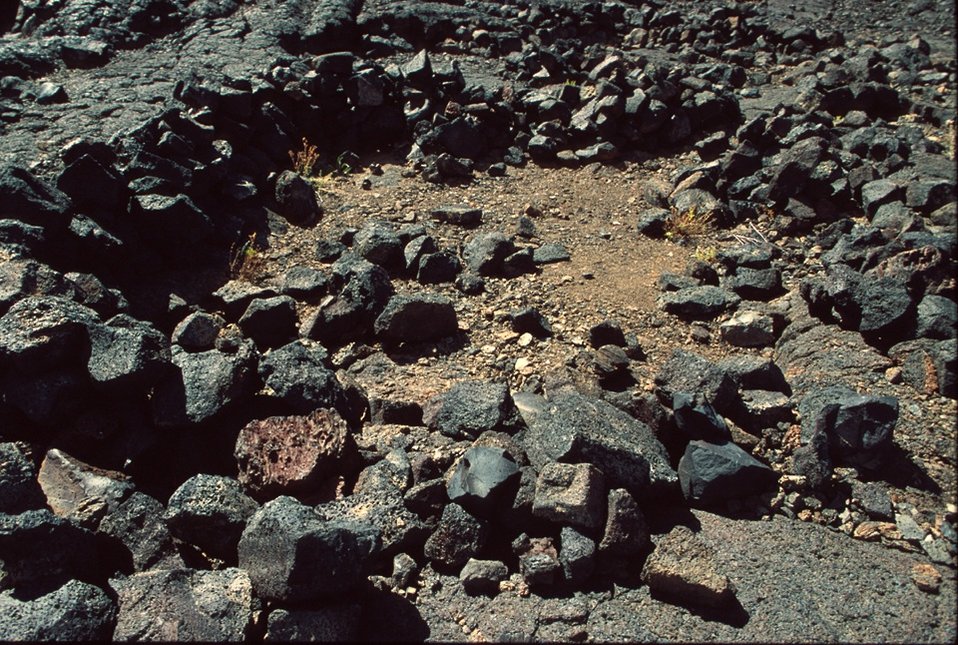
Shoshone Field Office USRD Upper Snake River District